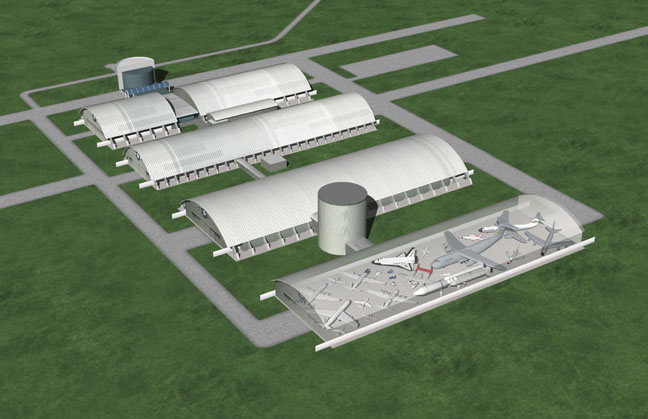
Air Force Museum Foundation

Artist's rendering of the proposed fourth building at the National Museum of the U.S. Air Force.